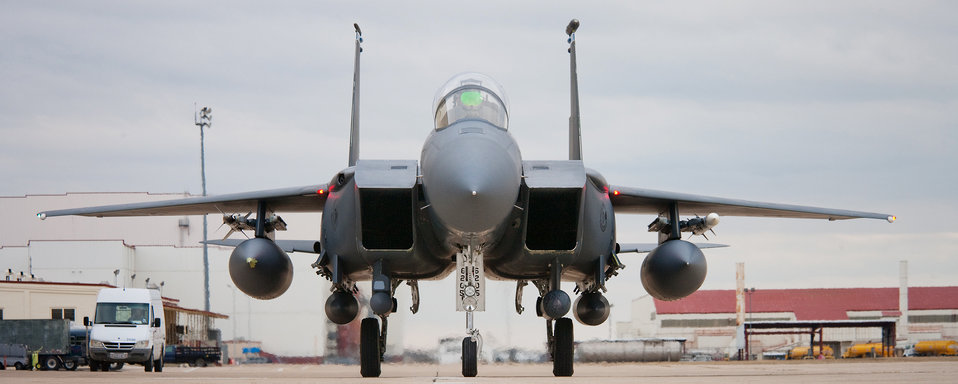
F-15E pilot strikes 4,000 hours

Lt. Col. David Iverson and Capt. Tim Tendall, with the 492nd Fighter Squadron, taxi their F-15E Strike Eagle on the flightline at Lackland Air Force Base, Texas, Jan. 11, 2010. Colonel Iverson passed 4,000 flight hours in the F-15E during the flight from Royal Air Force Lakenheath, England. The transatlantic flight was supported by seven in-flight refuelings. The exact moment he passed the milestone was while connected to a KC-135 Stratotanker.